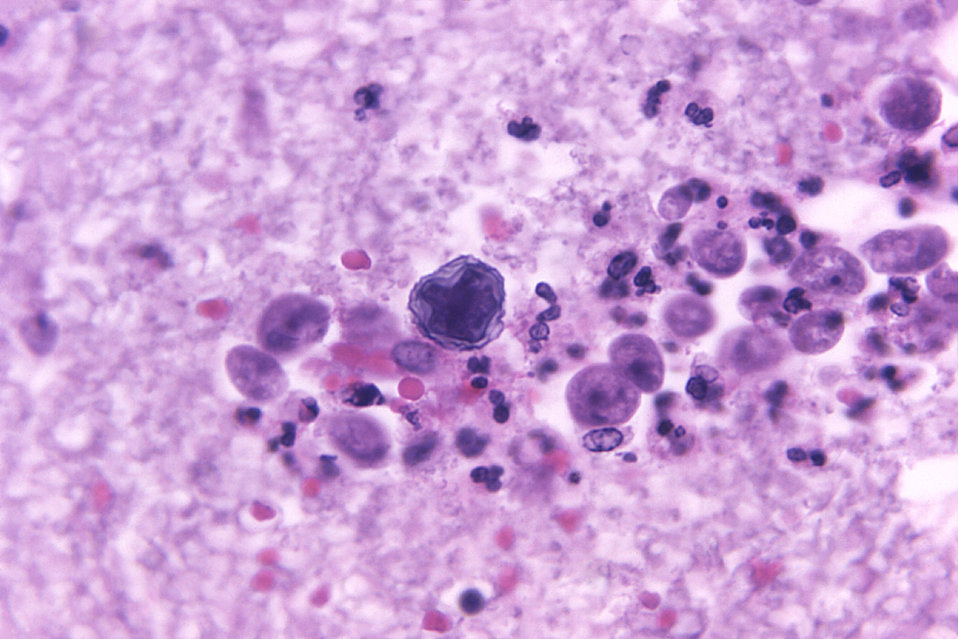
Magnified 500X, this 1971 photomicrograph depicted some of the histopathologic cytoarchitectural changes associated with an infection found in a brain tissue specimen due to the presence of free-living amoebae, Naegleria gruberi. Free-living amoebae belonging to the genera Acanthamoeba, Balamuthia, and Naegleria, are important causes of disease in humans and animals.What is Naegleria?